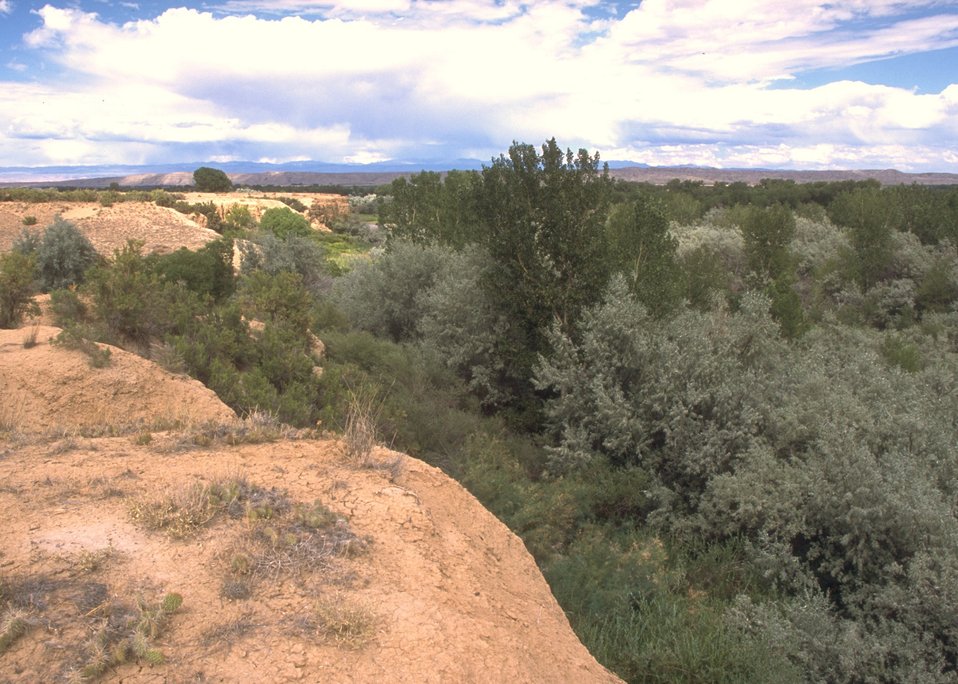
Duck Swamp Interpretive Area, Worland Field Office.